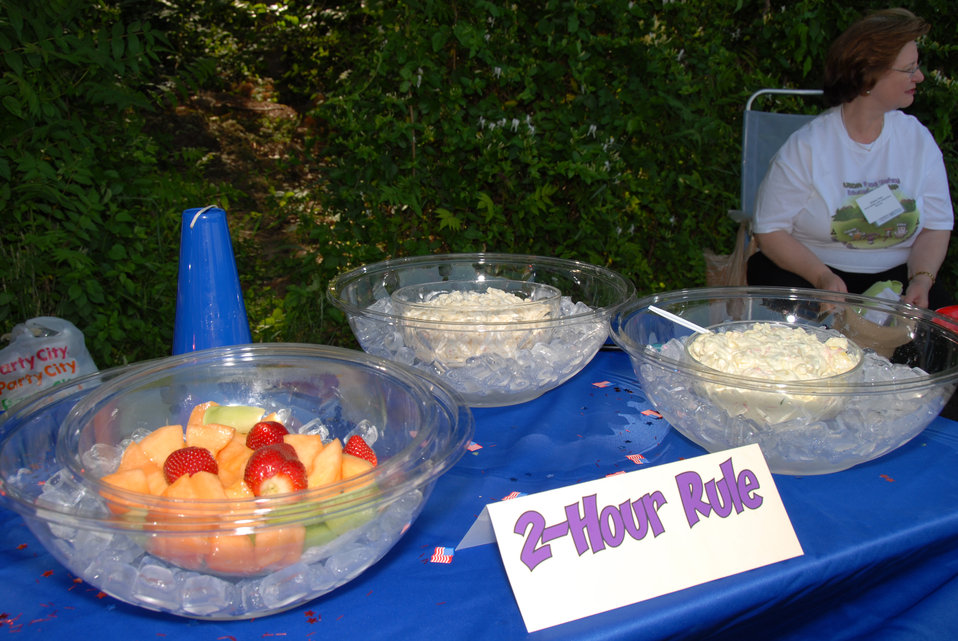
U.S. Department of Agriculture's (USDA) Food Safety and Inspection Service (FSIS) annually hosts a food safety camp that provides children with hands-on instruction about the dangers of foodborne illness and how to prevent it. This Food Safety camp was held at the USDA Beltsville, Maryland facility on May 23, 2007. An important lesson of the day was to keep hot foods hot and cold foods cold. Food safety campers learned that popular summer side dishes like potato salad, fruit salad and even celery and carrot sticks must be kept at 40 °F or below in order to prevent the growth of bacteria. Foods that have been left out in warm summer temperatures for longer than an hour should never be eaten.